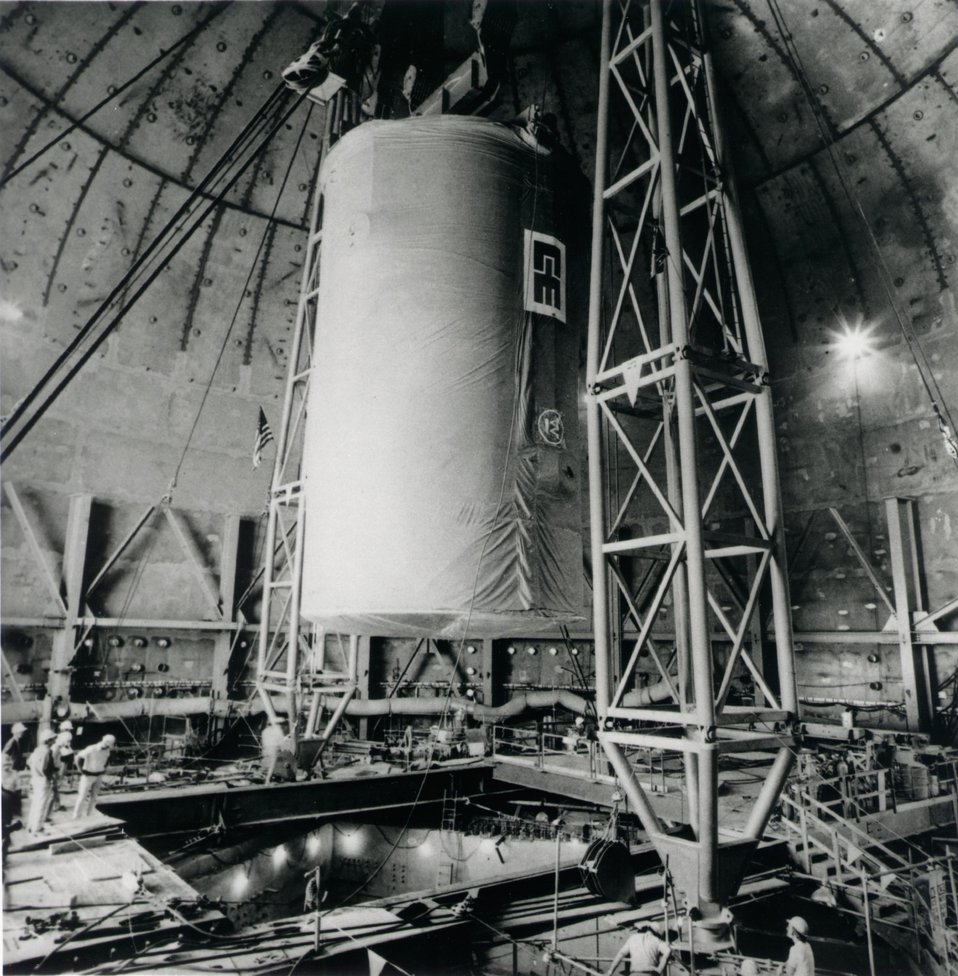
The Fast Flux Test Facility reactor guard vessel was installed September 17, 1974, in the reactor cavity. c. 1974.